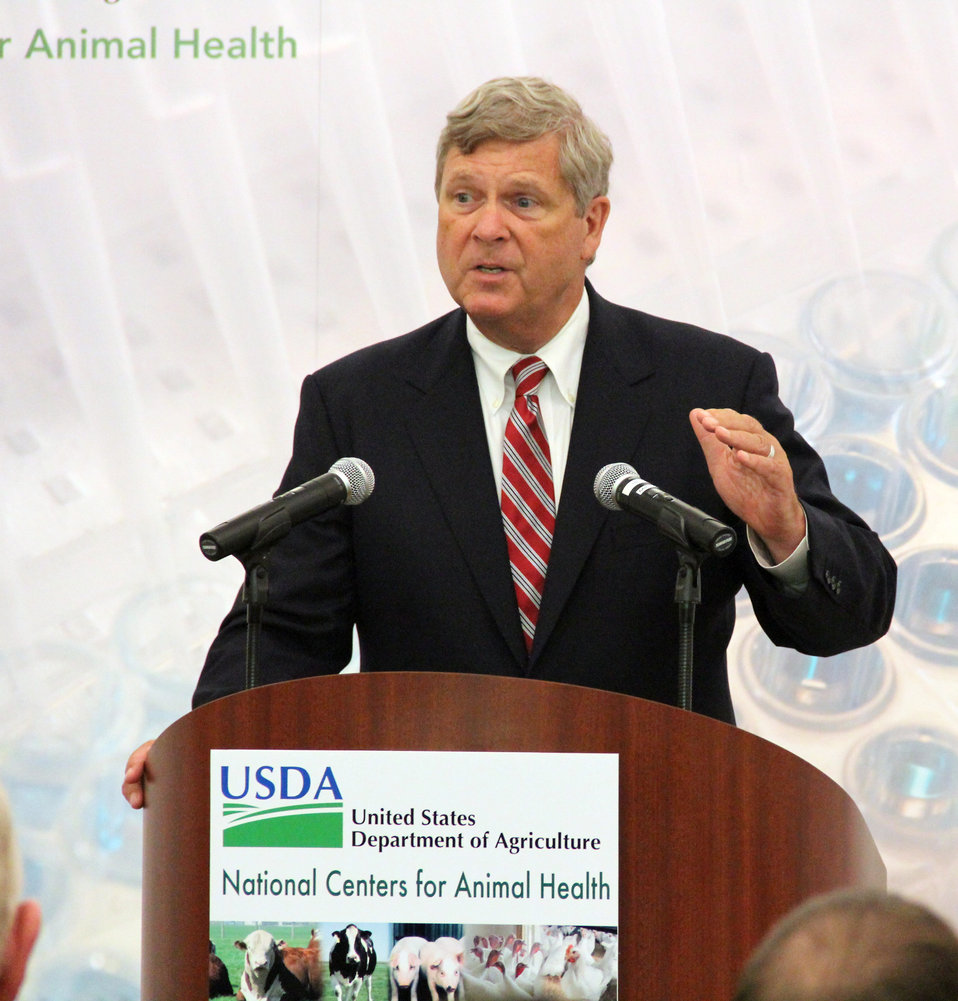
Agriculture Secretary Tom Vilsack speaks about the highly contagious pig virus that has killed over 7 million animals and what the U.S. Department of Agriculture's (USDA) plans are to combat the disease to an audience of researchers and news media at USDA's National Centers for Animal Health in Ames, IA on Friday, Jun. 6, 2014.